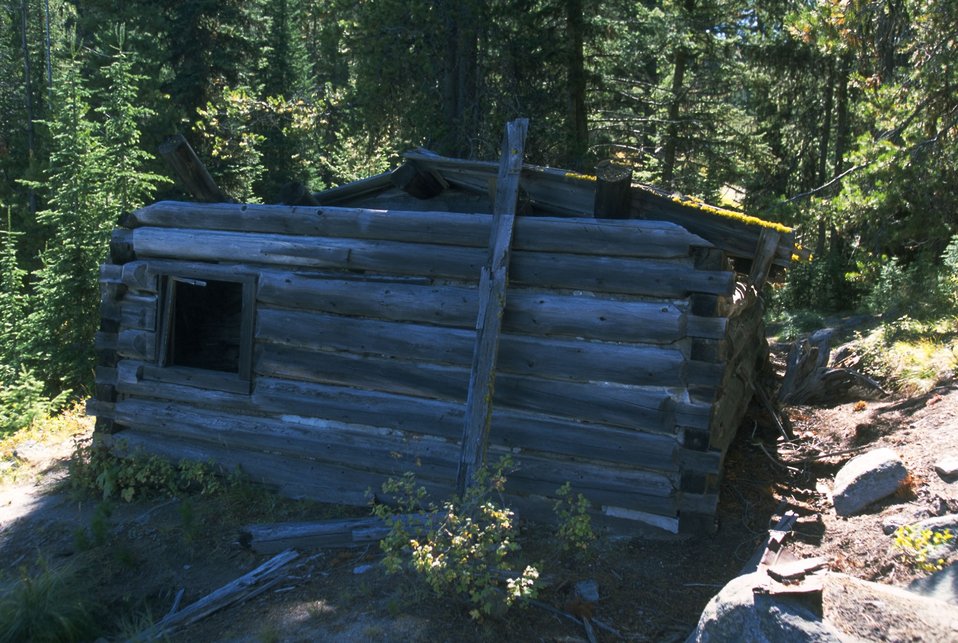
Coloma Ghost Town--collapsing cabin